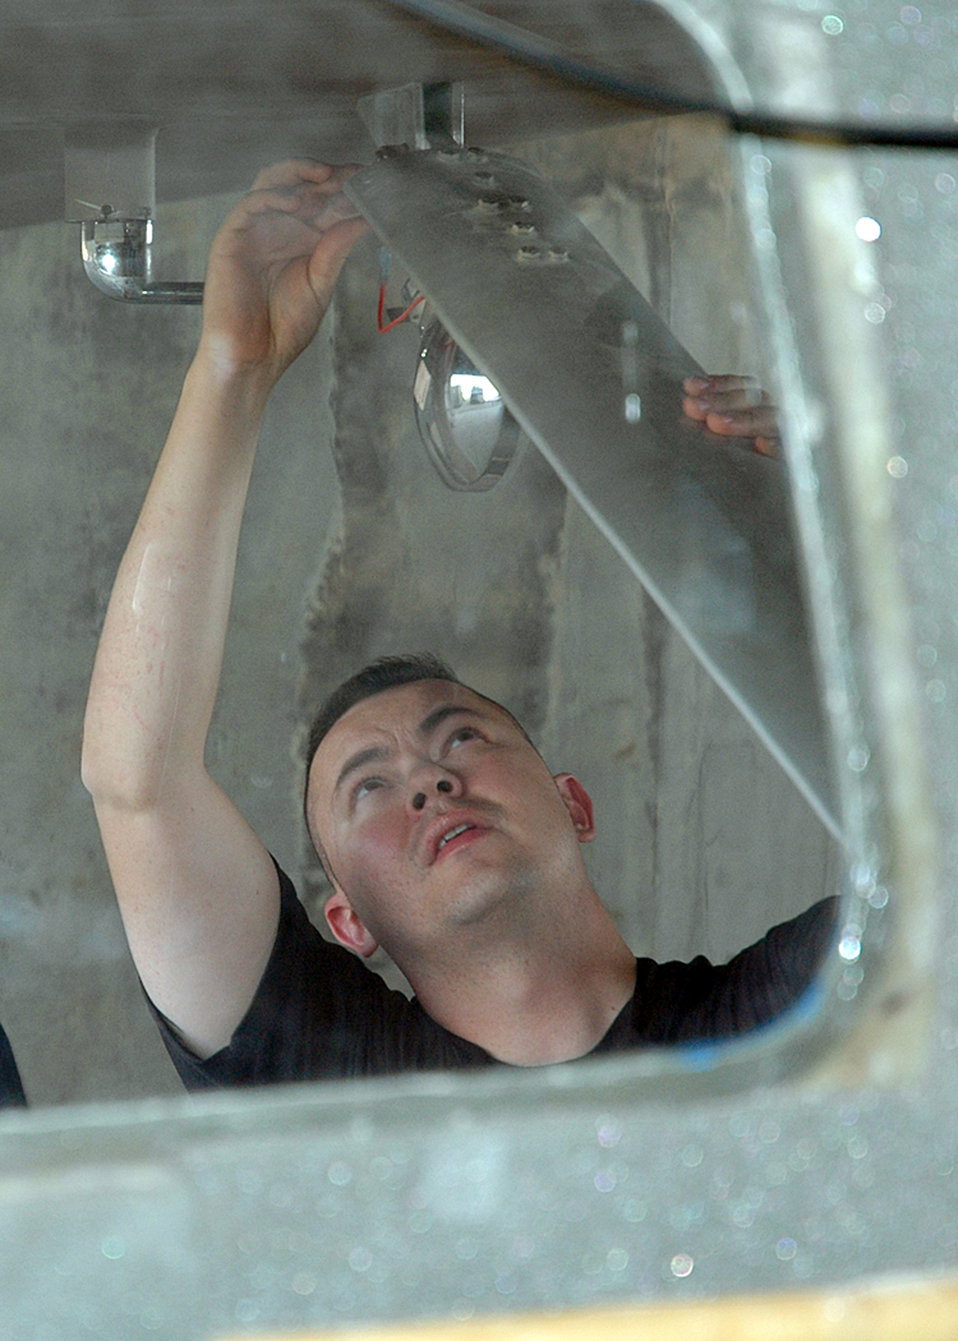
Mission accomplished for Airmen on project team

Staff Sgt. Michael Reed wires one of the landing lights on an Iraqi Air Force Comp Air 7SLX aircraft at Kirkuk Air Base, Iraq. Sergeant Reed is an electrical and environmental systems craftsman with the aircraft project team.